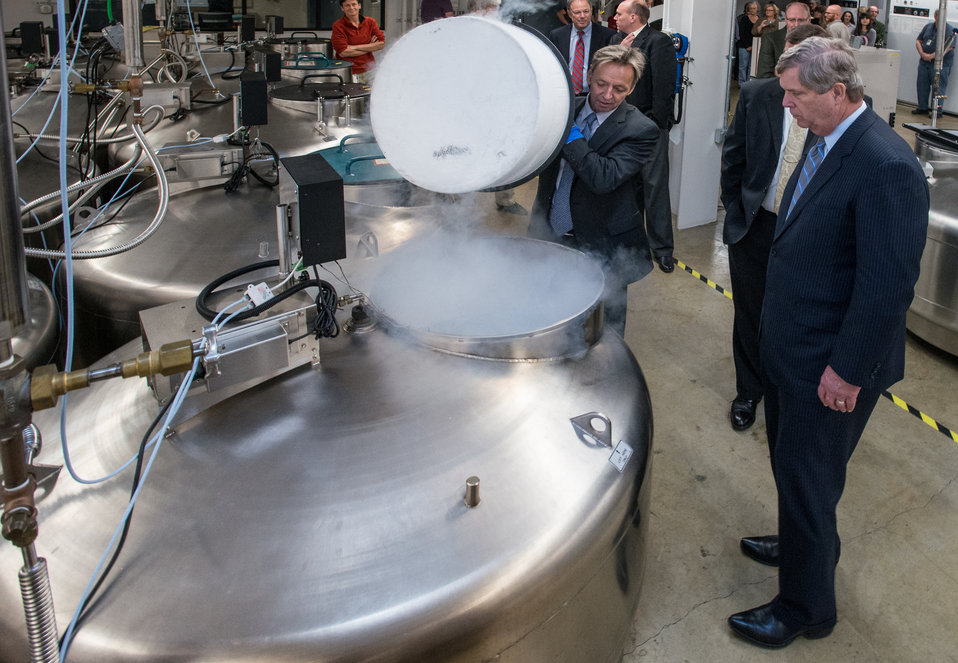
U.S. Department of Agriculture (USDA) Agriculture Research Service (ARS) National Center for Genetic Resources Preservation (NCGRP) Research Geneticist Leader Dr. David Dierig lifts a thickly insulated plug to a cryogenic storage tank as Colorado State University (CSU) President Dr. Anthony Frank (second from right) and Agriculture Secretary Tom Vilsack try to see through the nitrogen vapor to the seed containers inside at the Cryogenic Storage Vault at USDA's ARS National Center for Genetic Resources Preservation (NCGRP) in Ft. Collins, CO on Wednesday, Nov. 6, 2013. The vault stores more than 45 cryogenic tanks that hold animal germplasm, plant tissue culture, and seeds that are stored at -196 °C (-321 °F) in liquid storage or to -193 °C (-315 °F) in vapor storage. NCGRP is the largest agricultural gene bank facility in the U.S. The NCGRP staff conducts groundbreaking research to develop more efficient and effective means for preserving plant and animal germplasm, and for better understanding the genetic structure of these invaluable materials. The research findings, preservation techniques, and specialized technology developed by the NCGRP have been adopted by gene banks around the world: many international scientists travel to the NCGRP for research and training.